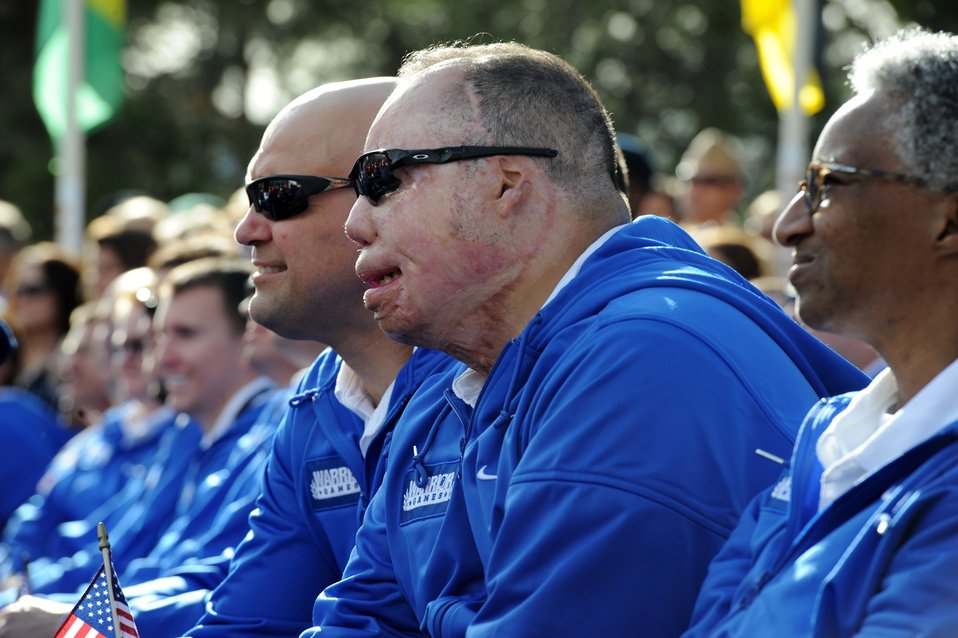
Opening Ceremony

Members of the Air Force team listen as Navy Adm. James Winnefeld speaks during the opening ceremony of the 2011 Warrior Games May 16, 2011, at the U.S. Olympic Training Center in Colorado Springs, Colo. Some 200 wounded warriors and disabled veterans from all the military services are competing in paralympic-style athletic events May 16 through May 21.